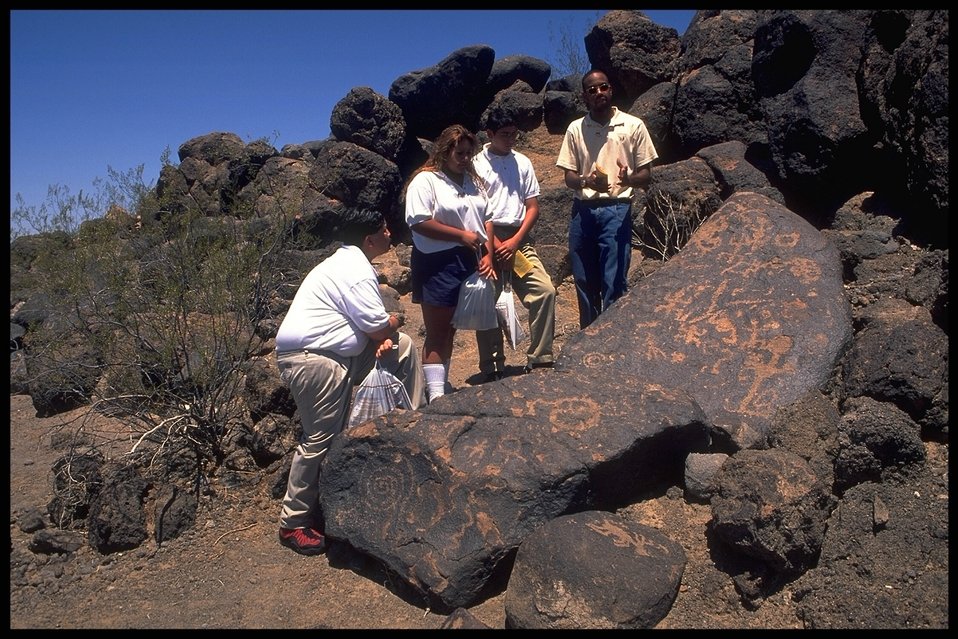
Through ROAR - Rediscover Our American Roots -- students "read" rock art to learn the history of past peoples.